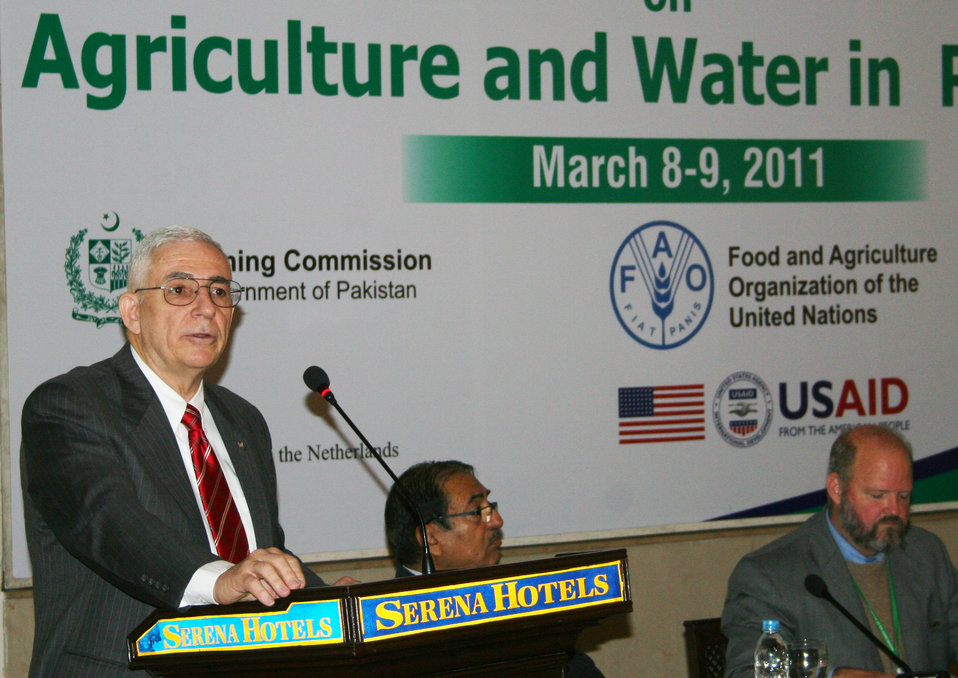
Roundtable Discussion on Agriculture and Water in Pakistan

Islamabad, March 8, 2011 – USAID/Pakistan Deputy Mission Director Rodger Garner addresses a roundtable on agriculture in Islamabad. The roundtable was co-sponsored by USAID, the World Bank, the UN Food and Agriculture Organization, the Dutch Embassy, and the Planning Commission of Pakistan.